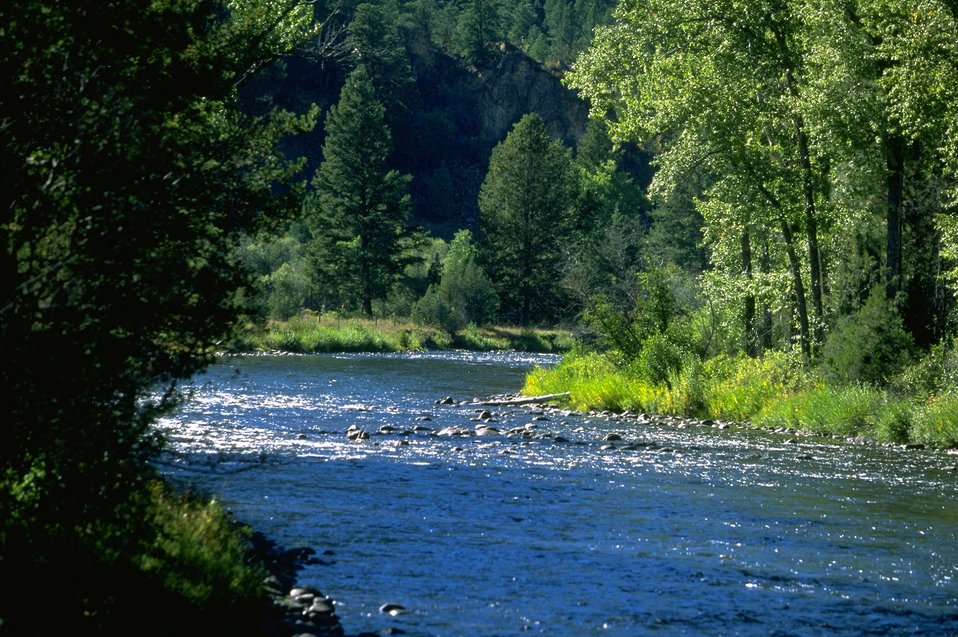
Rock Creek near Squaw Rock ACEC (area of critical environmental concern)